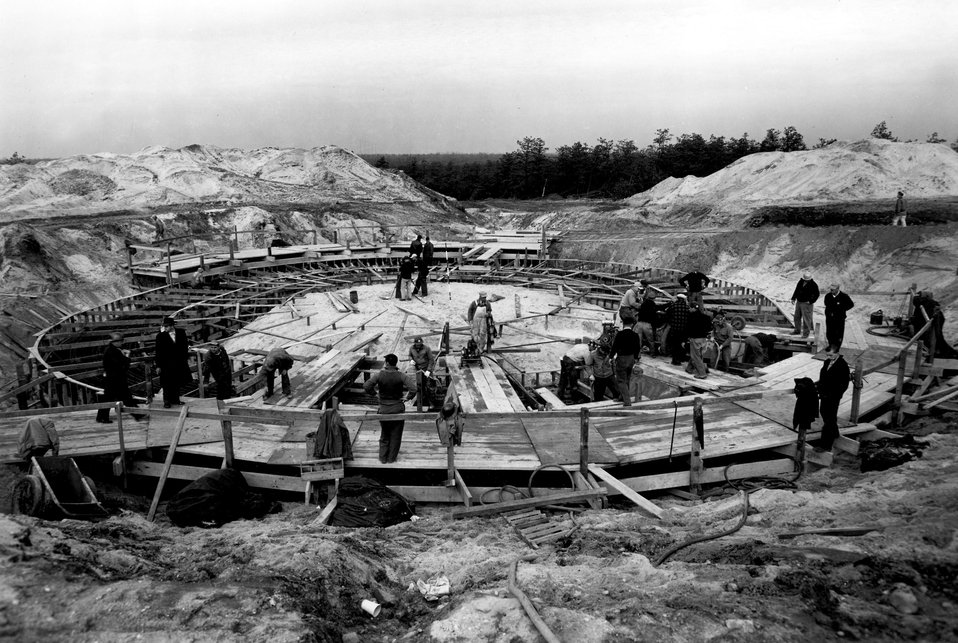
A wooden form into which concrete was poured for foundation shown in photograph No. 1-110-9.